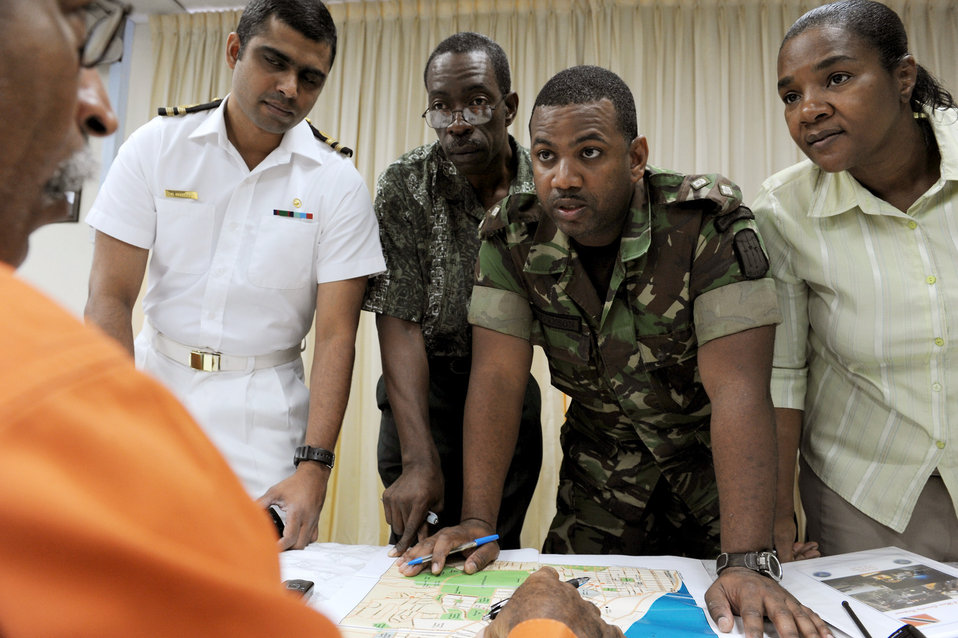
Trinidadian training concludes with counter-terrorism exercise

Local officials attend a disaster planning and mass casualty response class for primary care providers July 23, 2010, in Port of Spain, Trinidad and Tobago.